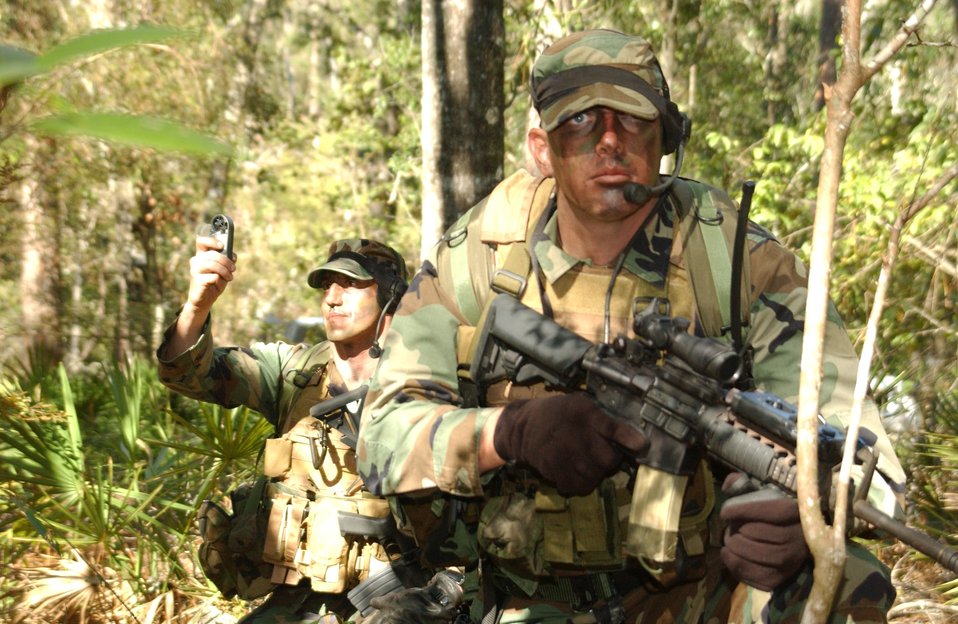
Special operations weather

Staff Sgt. Jody Ball scans the surrounding area for threats while Tech Sgt. Rick Rohde collects weather data during a training exercise held near Hurlburt Field, Fla. Both Airmen are assigned to the 10th Combat Weather Squadron.